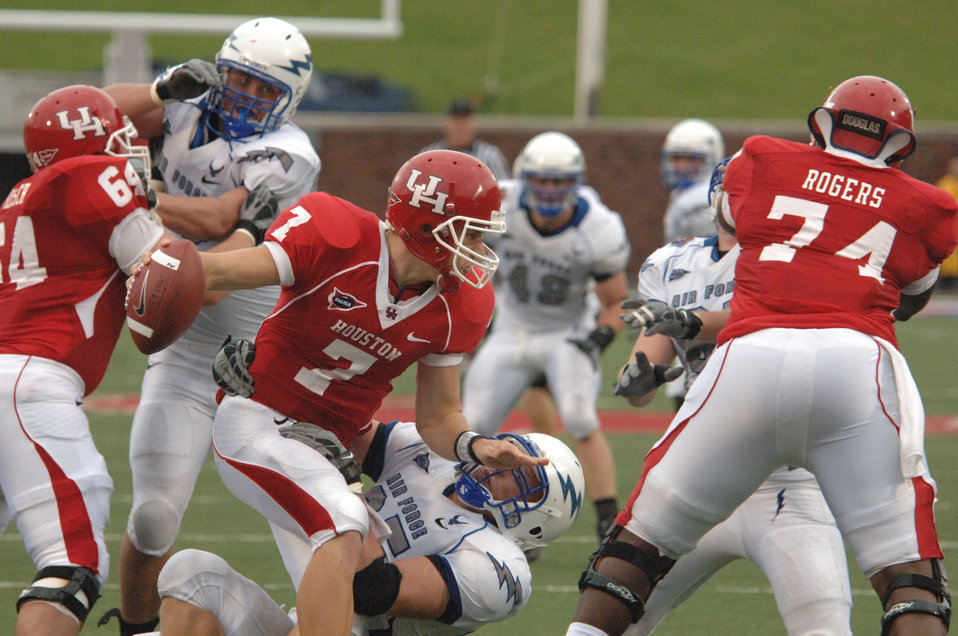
Football: Falcons hold off Cougars in wake of Hurricane Ike

U.S. Air Force Academy defensive end Jake Paulson latches onto Houston quarterback Case Keenum for a sack Sept. 13 in Dallas. Paulson ended the game with 2.5 sacks and seven tackles as the Falcons upped their record to 3-0 with a 31-28 win over Houston.